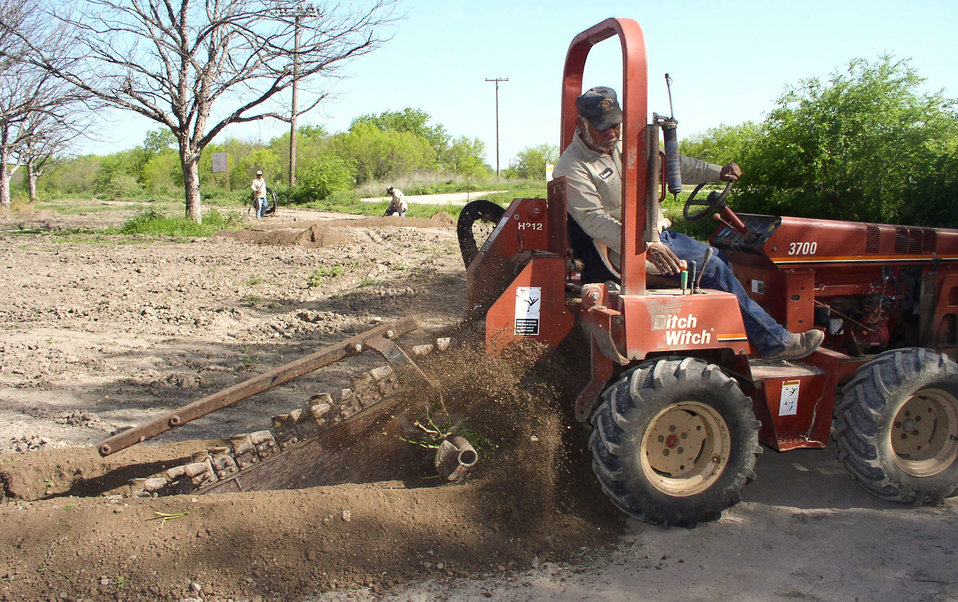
Long trenches are dug for water distribution pipes and tubes at Arrowhead Farms for an underground micro drip irrigation system in Crystal City, TX, on Tuesday, March 29, 2010. Up until now flood irrigation has been used and it results in a high degree of weed growth throughout the grounds. Underground irrigation will almost all the water on the topsoil dramatically retarding weed growth and the need for labor and cost of herbicides. In all, about 25,000 feet of drip tubing was used. The 719-acre farm with 10,000 trees, features some orchards with underground micro irrigation system that feeds water to the roots of 4,380 pecan trees on 146 acres. Mr. Mohammad said, “USDA (U.S. Department of Agriculture) was essential to my business and trees surviving the recent exceptional drought. The trees were stress free thanks to underground micro-irrigation. This is essential to the future growth of Texas agriculture and good for America.” U.S. Department of Agriculture’s (USDA) Environmental Quality Initiative Program (EQIP) awarded Mr. Mohammad a $130,000 grant in 2008. He provided $26,000 for the balance of the $156,000 total cost to install a 146-acre underground micro-irrigation for 4,380 trees.